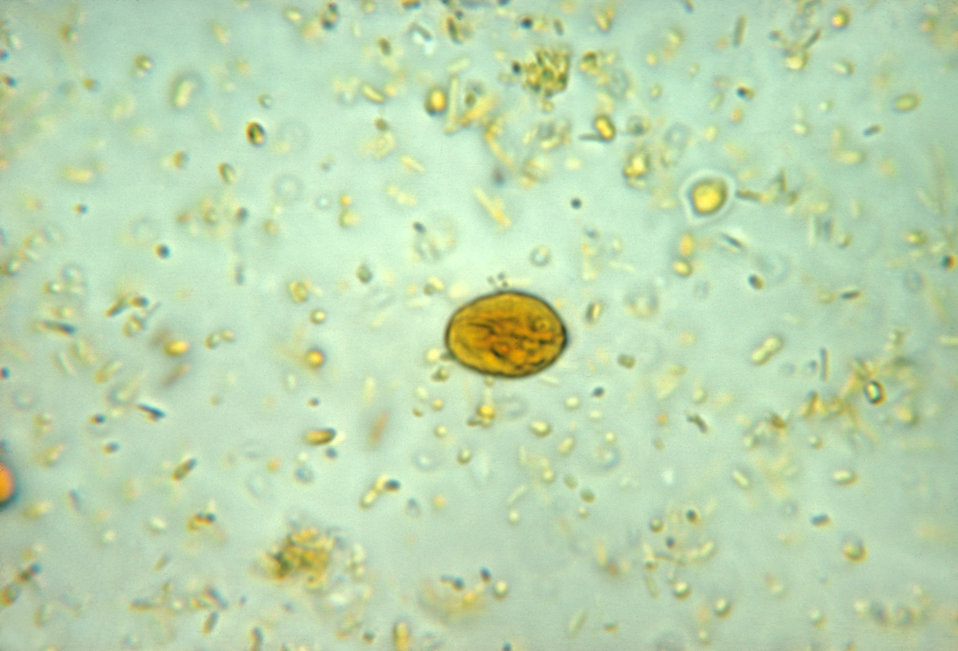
Giardia lamblia cyst. Iodine stain.